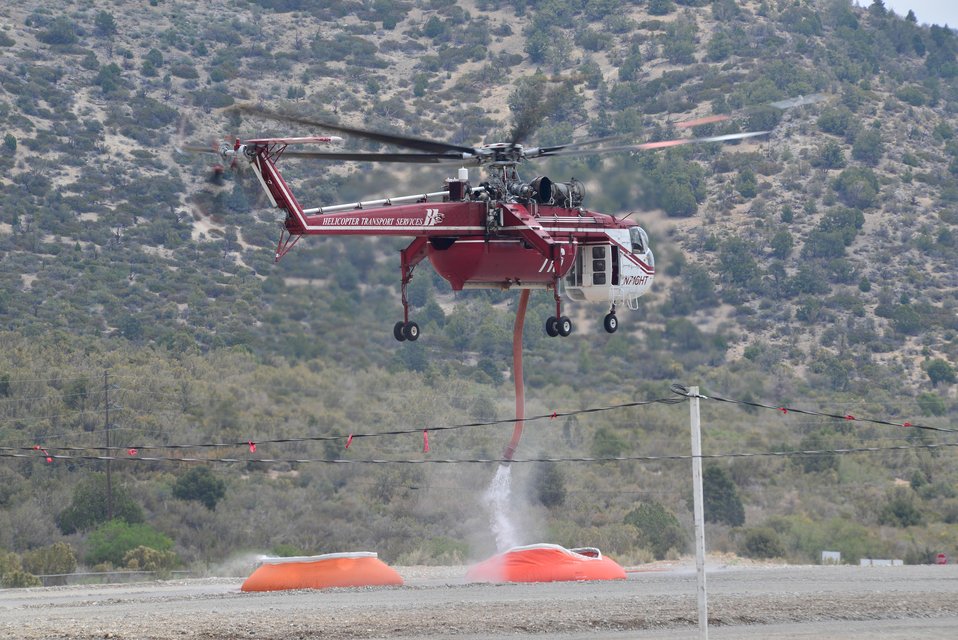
A fire helicopter refills its water tank at near Kyle Canyon to suppress spread of Carpenter Fire. The Carpenter Fire in the Toiyabe National Forest near Humboldt, NV was caused by a lightning strike on Jul. 1, 2013. The fire has consumed nearly 27,881acres and is presently 70% contained.